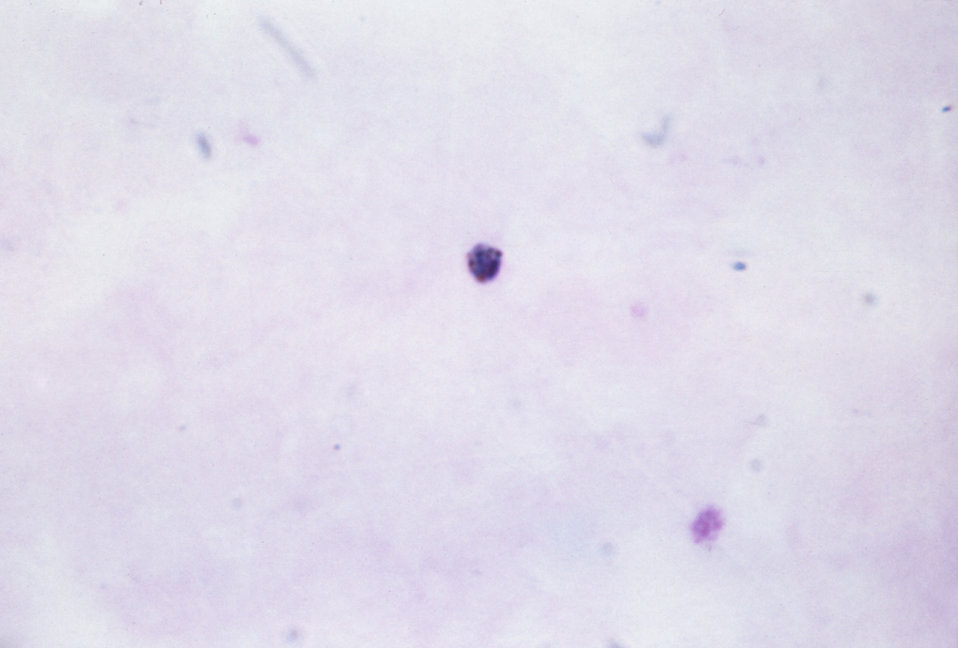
This thick film Giemsa stained micrograph shows a gametocyte, and a mature, growing Plasmodium malariae trophozoite.